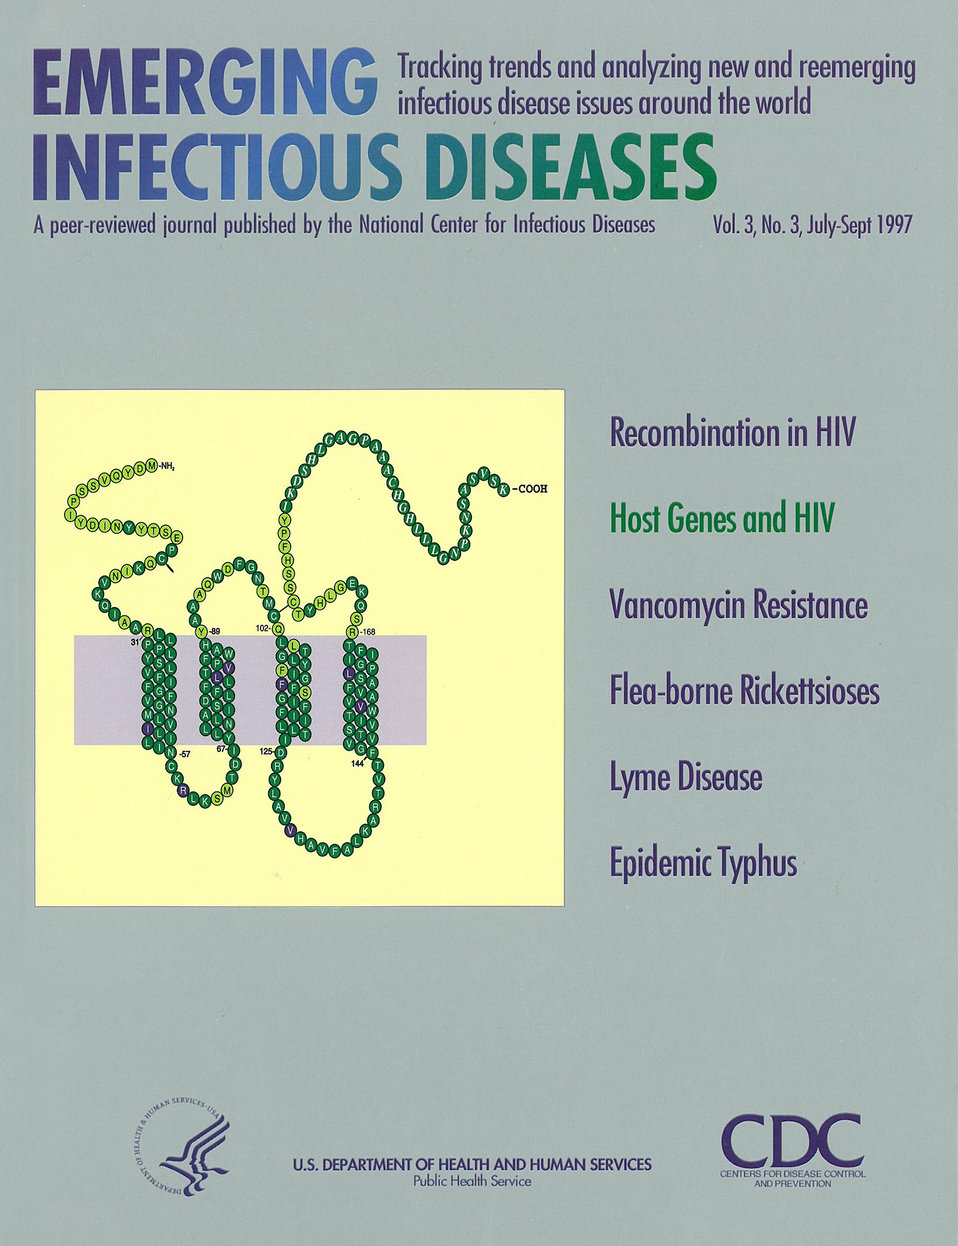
Emerging Infectious Diseases (EID) cover artwork for Volume 3, Number 3, July-September 1997 issue.